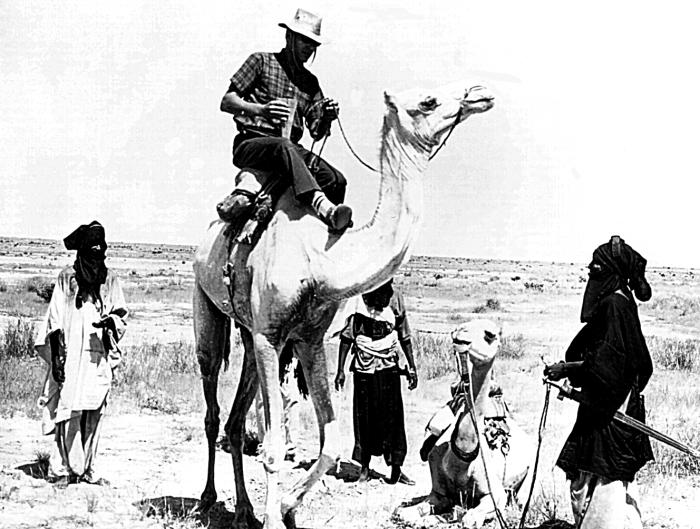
Here Operations Officer Anthony R. Masso uses a non-mechanical mode of transport in Niger, Africa during a smallpox outbreak.